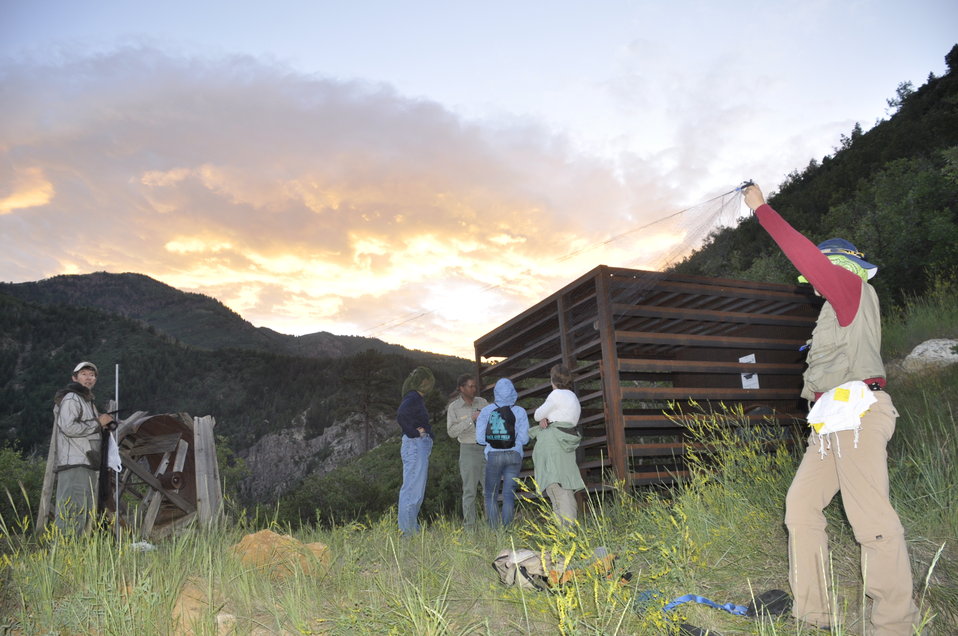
Setting up the mist net

Biologists set up mist net outside maternity colony site (mine) near Marble, CO